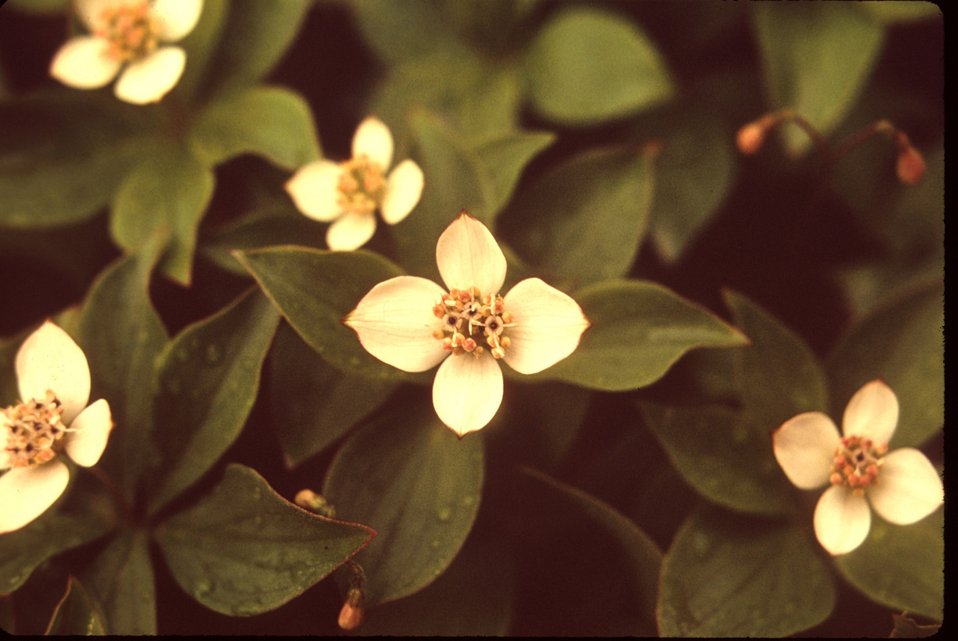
Cornus Bunch Berries Wildflower